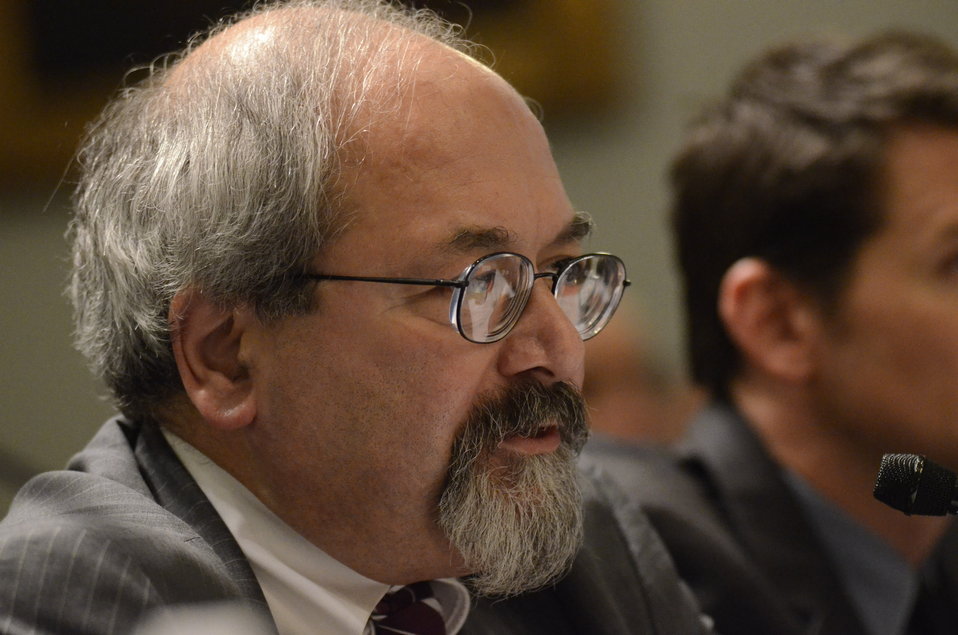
Climate Adviser and former Agriculture Undersecretary for Natural Resources and Environment Mark Rey testifies on Retailers & Entertainers Lacey Implementation & Enforcement Fairness Act & Freedom from Over-Criminalization & Unjust Seizures Act at the Longworth House Office Building in Washington, D.C. on Tuesday, May 8, 2012.